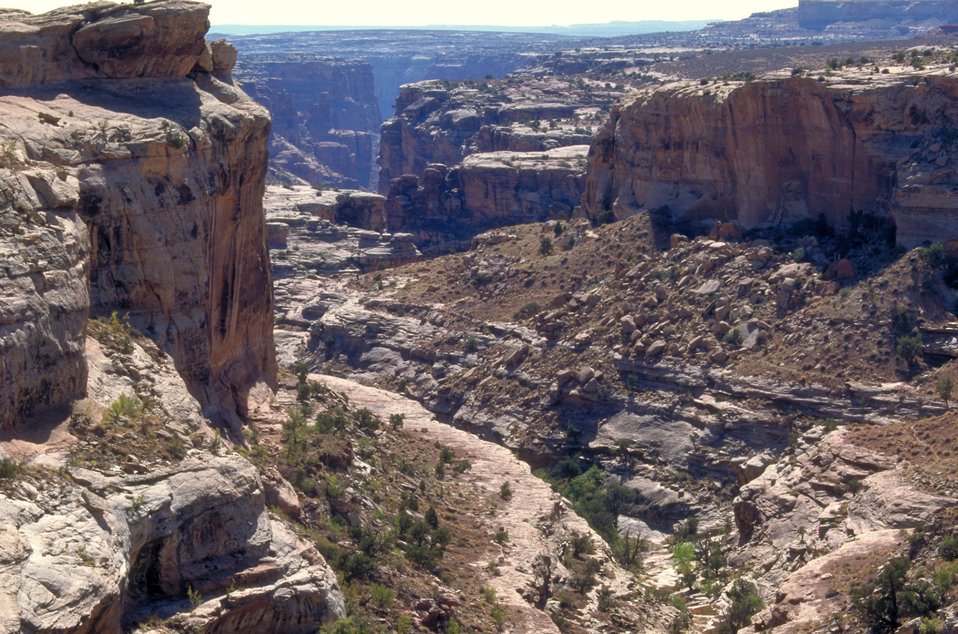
Head of Spring Canyon near the Green River near Moab, Utah.